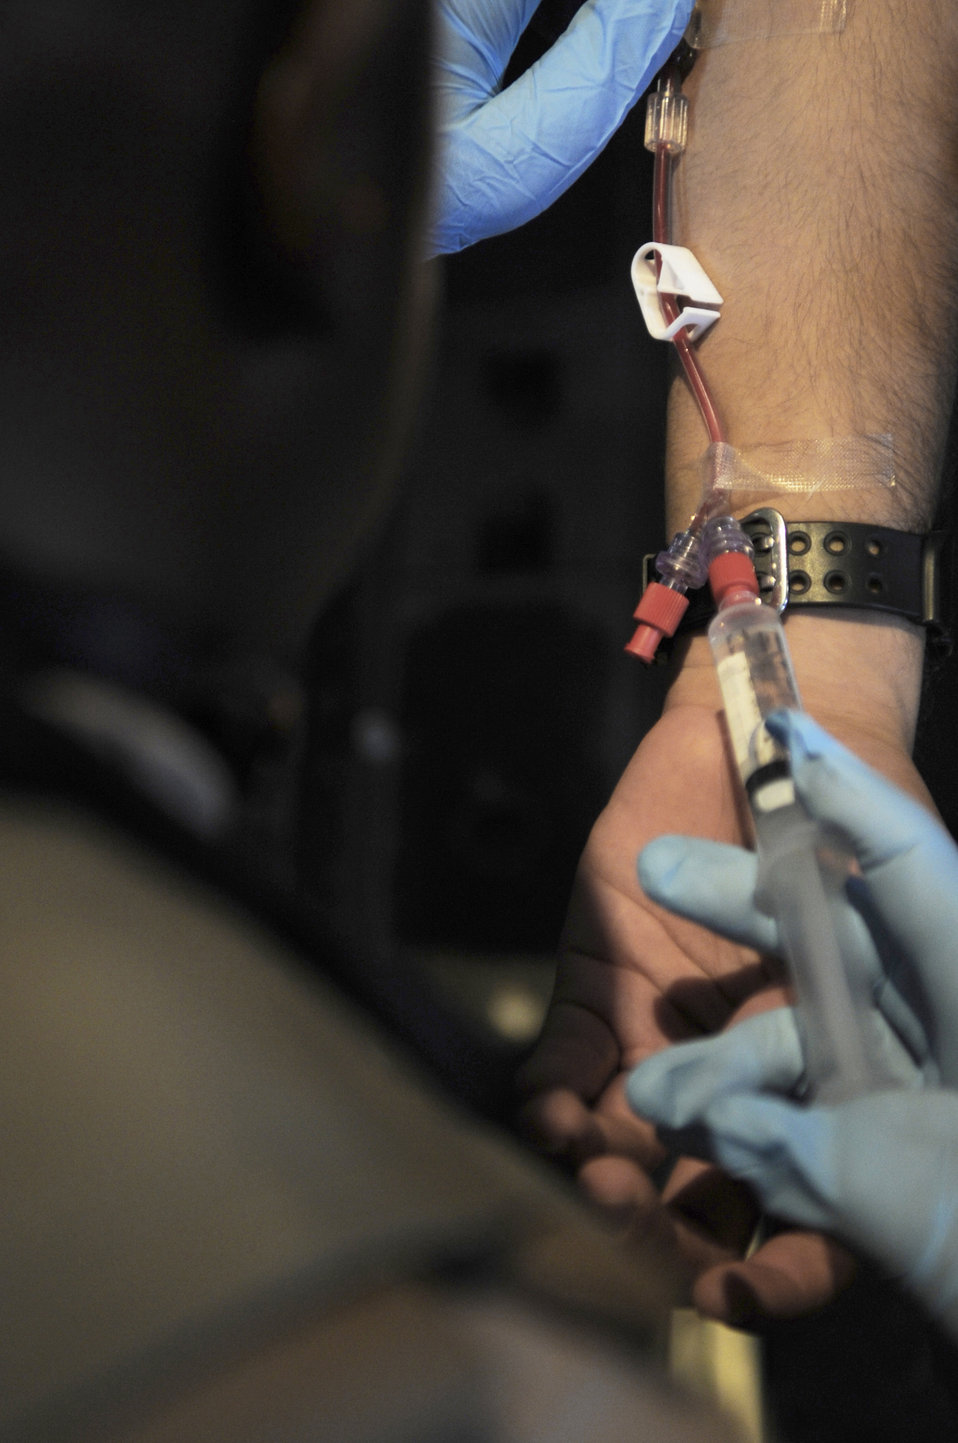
Aeromedical evacuation missions

Staff Sgt. Anthony Green gives an ambulatory patient a shot to relieve pain from his injuries June 9 on a C-130J Hercules. Sergeant Green is a reservist stationed at Charleston AFB, N.C., and is currently assigned to the 451st Expeditionary Aeromedical Evacuation Squadron.